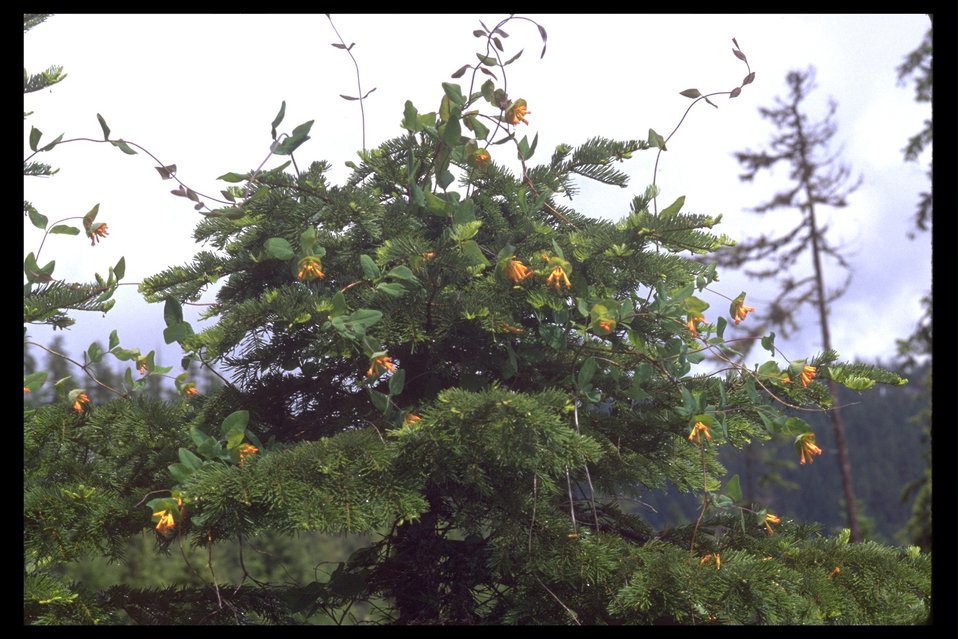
Orange Honeysuckle (Lonicera ciliosa) found along Upper Trail Creek Spring.